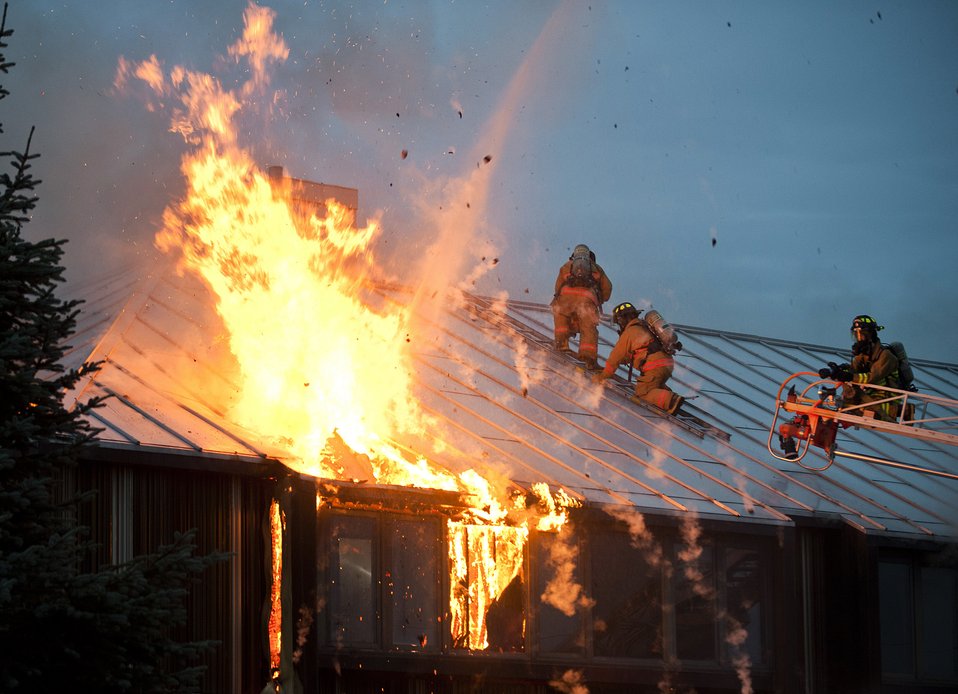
Fighting flames

Firefighters battle a fire Oct. 13, 2011, at the lodging facility at Joint Base Elmendorf-Richardson, Alaska. All occupants were accounted for and no injuries were reported.